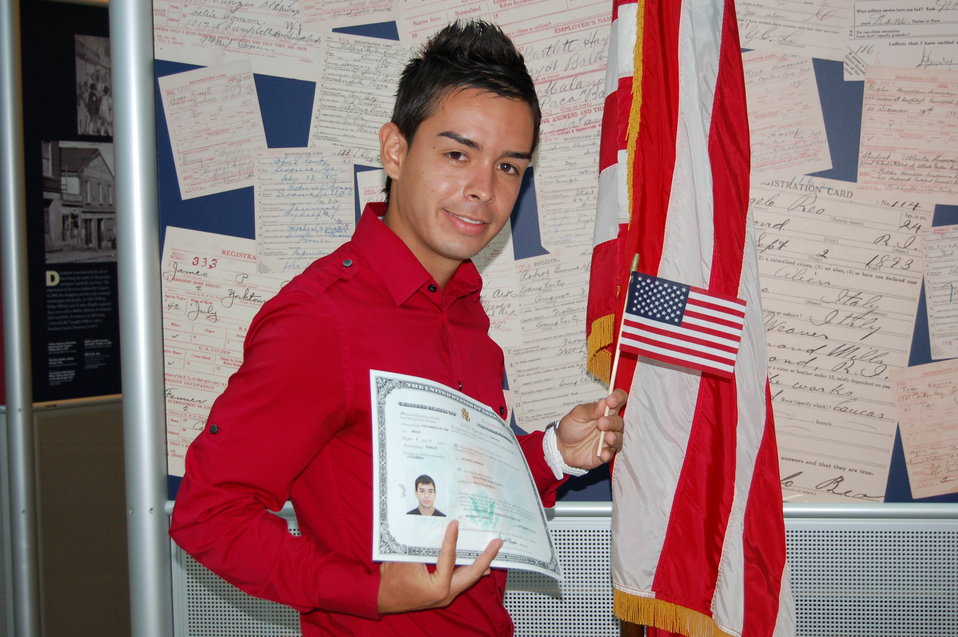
New Citizens